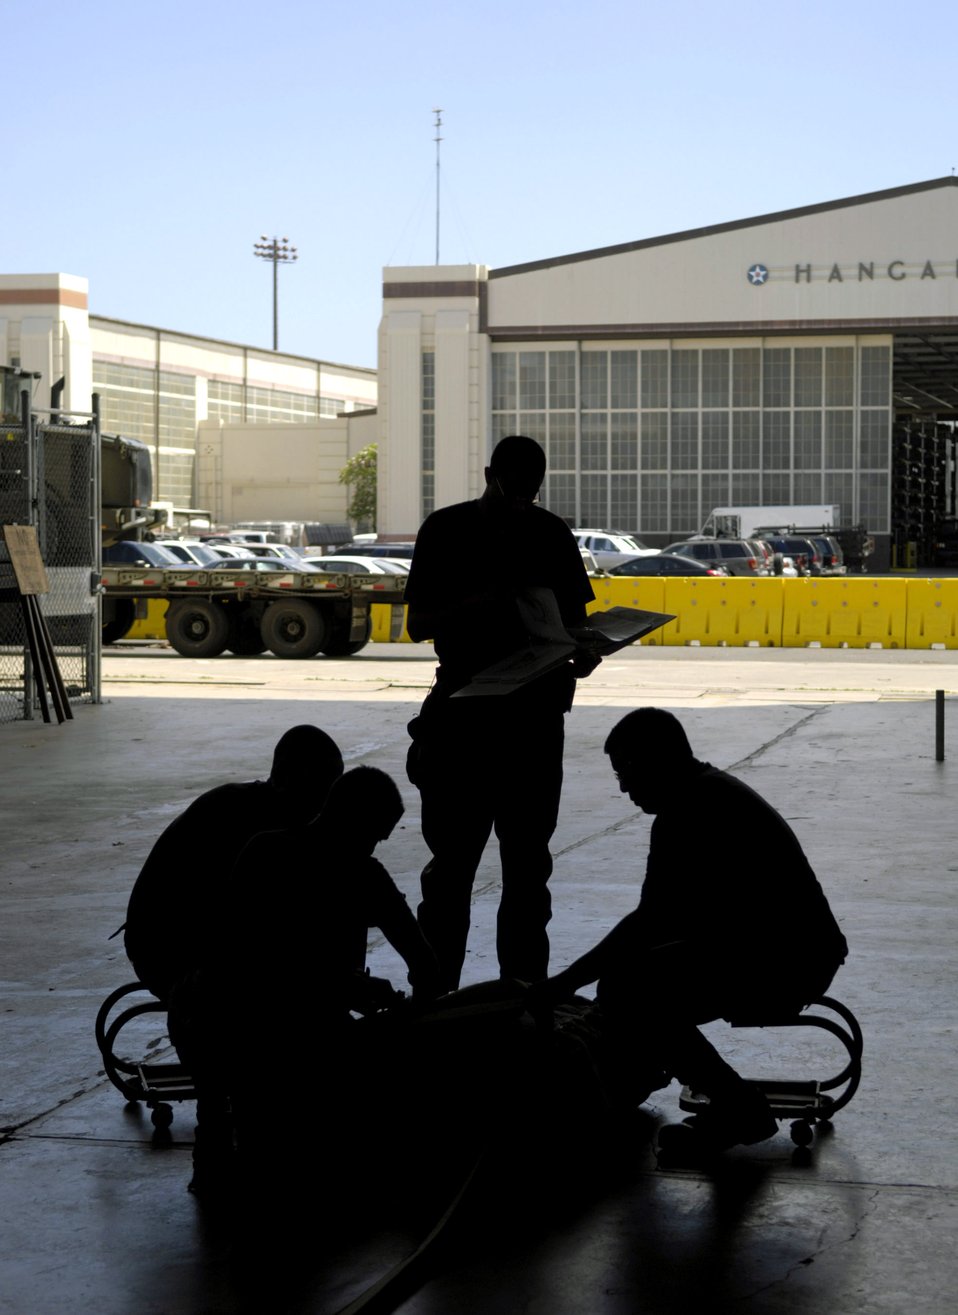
Chute riggers

Airman 1st Class Darrius Armstead (standing) watches over his team as they pack a parachute in a hangar at Hickam Air Force Base, Hawaii, June 11. They are preparing the parachute to be rigged to a practice airdrop bundle. The Airmen are from the 15th Logistics Readiness Squadron Combat Mobility Element.